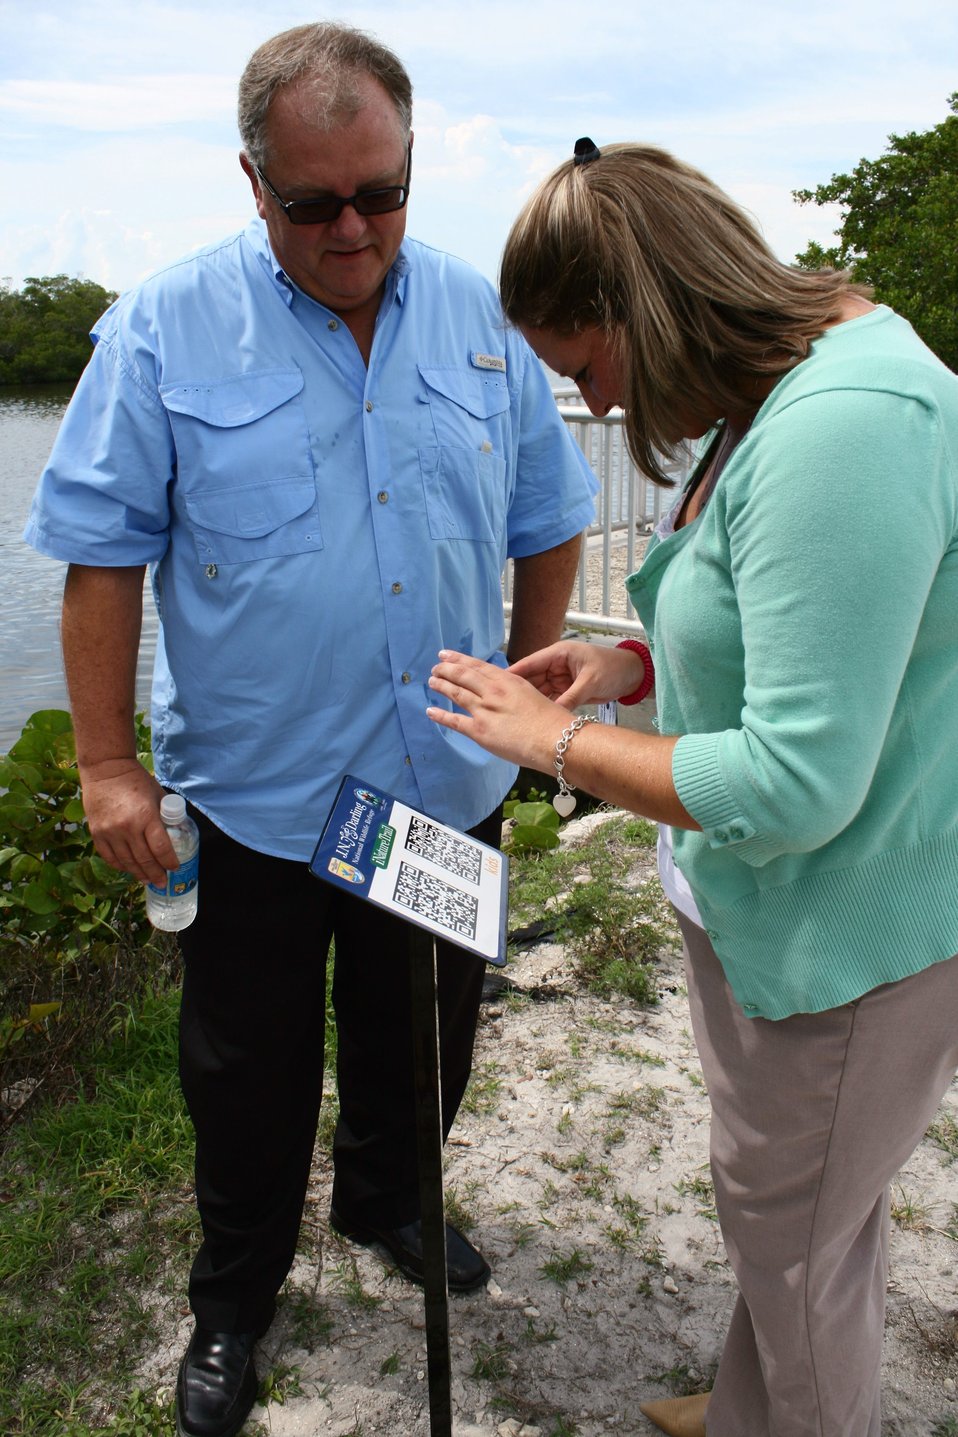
Scanning QR codes at Ding Darling Refuge

Two visitors to J.N. “Ding” Darling National Wildlife Refuge in Florida scan quick response (QR) codes along the iNature Trail into their smartphone. (Chelle Koster Walton)